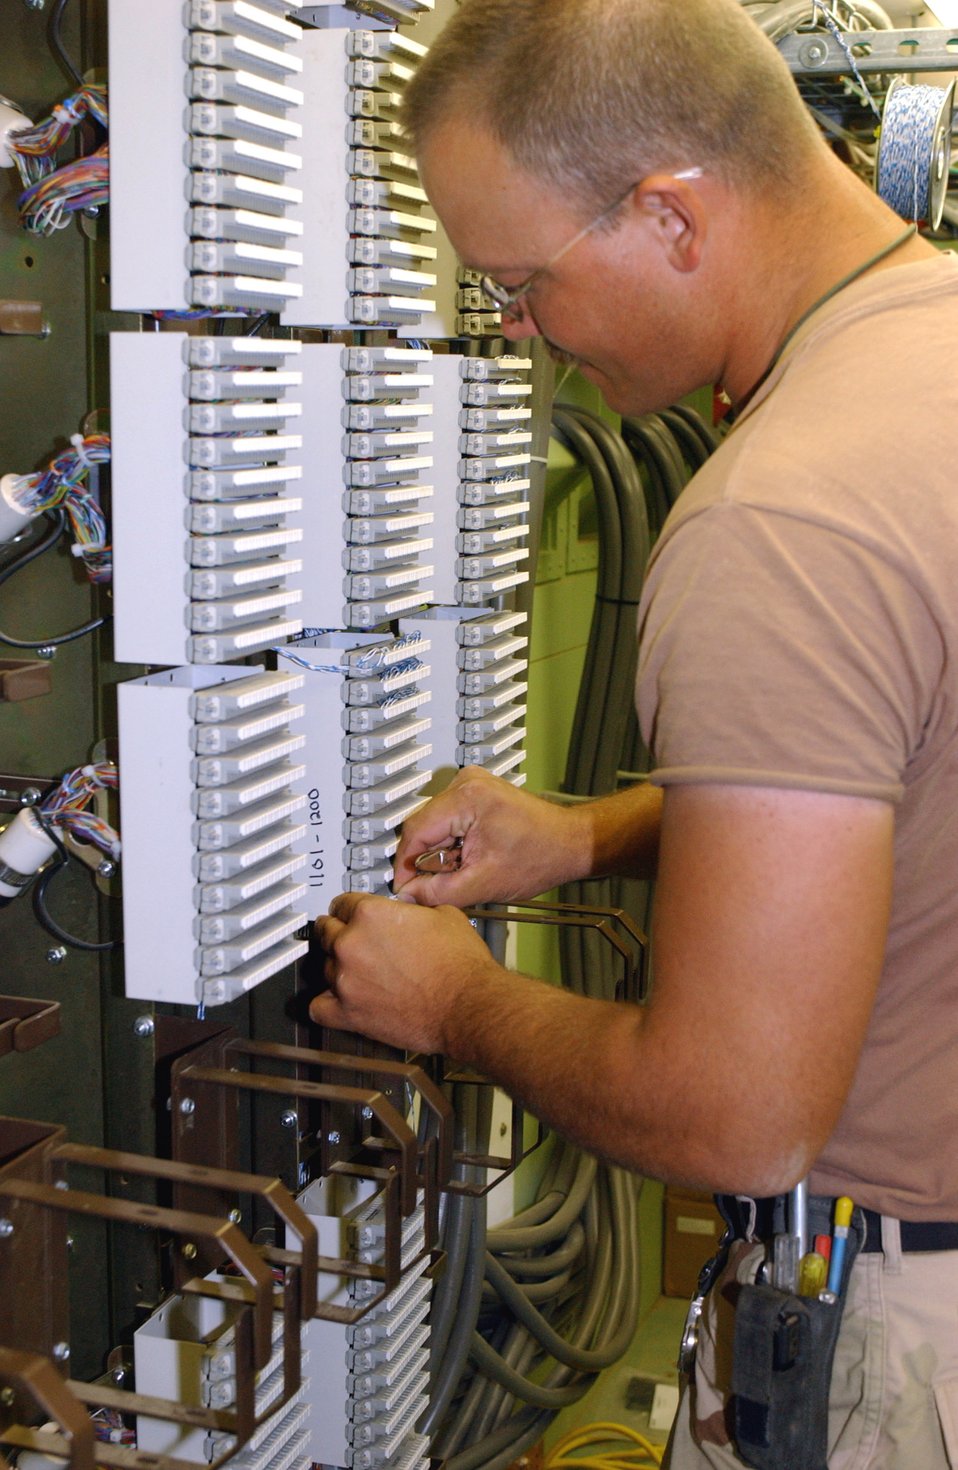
Connecting the world one wire at a time

Staff Sgt. Lee Doolen connects jumper cables to telephone circuits in the main distribution frame at Ali Base, Iraq, on Friday, May 6, 2006. Sergeant Doolen is deployed to the 407th Expeditionary Communications Squadron at Tinker Air Force Base, Okla.